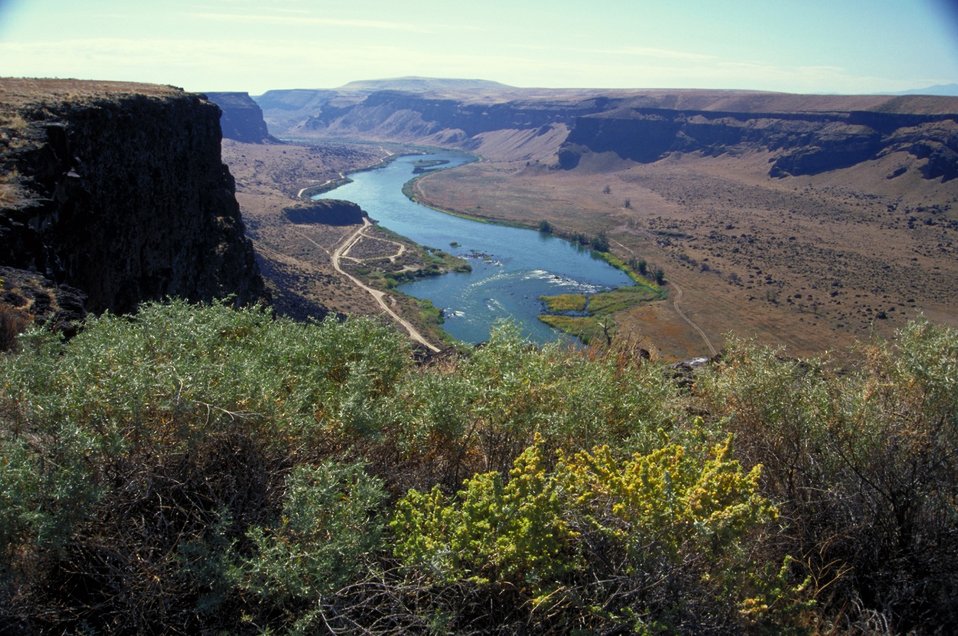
Snake River Birds of Prey National Conservation Area Scenic Four Rivers Field Office Lower Snake River District LSRD